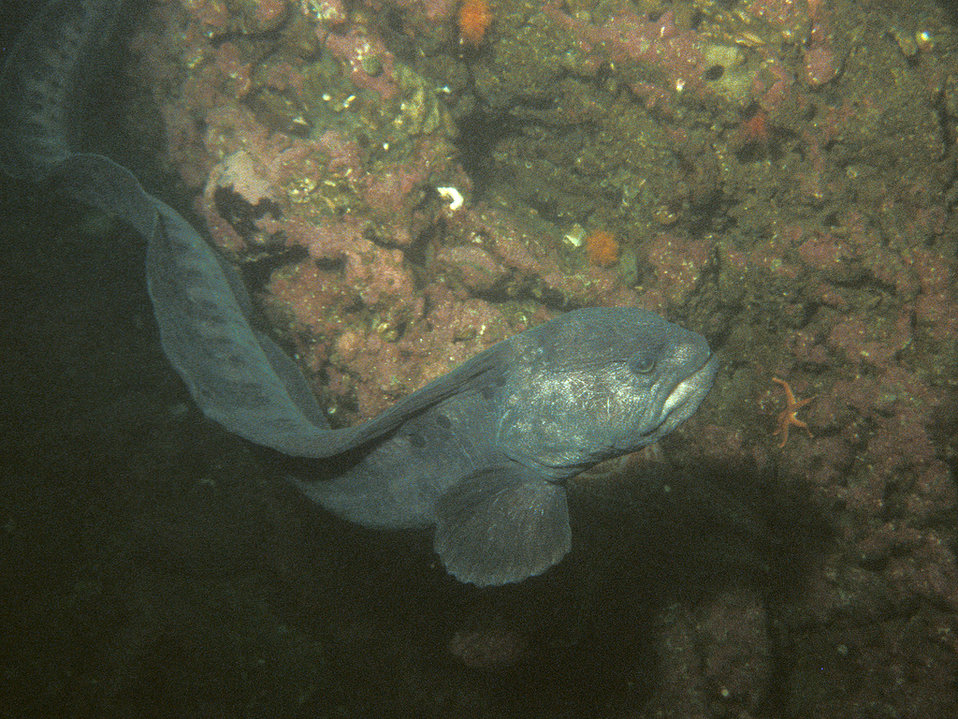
February 2, 2012 Wolf Eel (really a fish!) in Puget Sound

A wolf eel is not an eel at all, but a fish! This wolf eel (Anarrhichthys ocellatus) emerges from his den in south Puget Sound. The wolf eel is one of the many native species of fish that EPA's Puget Sound cleanup aiming to better protect.